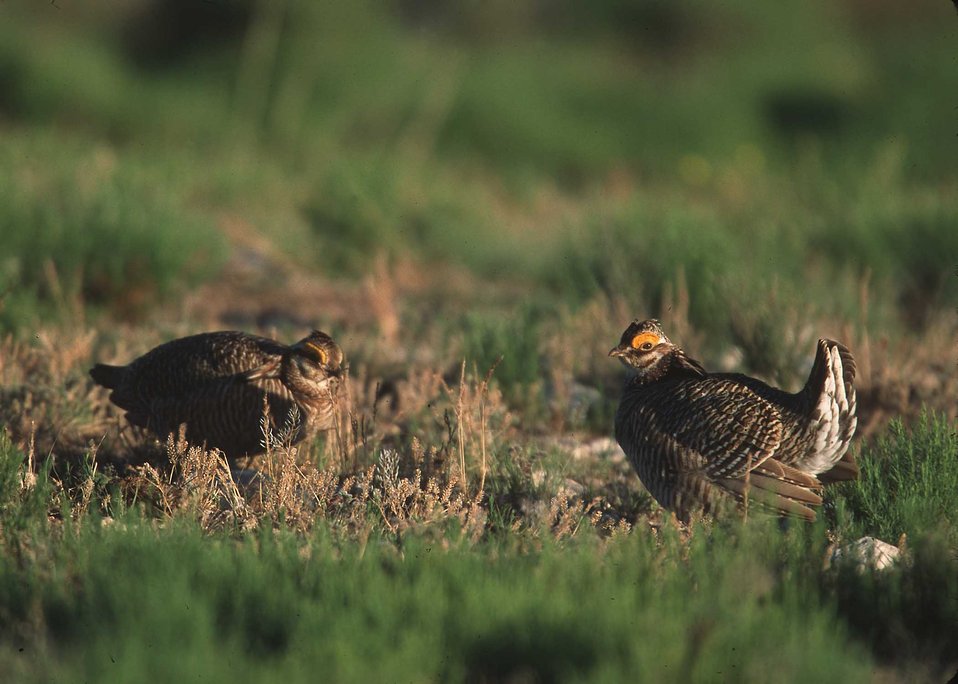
Lesser prairie chicken in Eastern New Mexico.